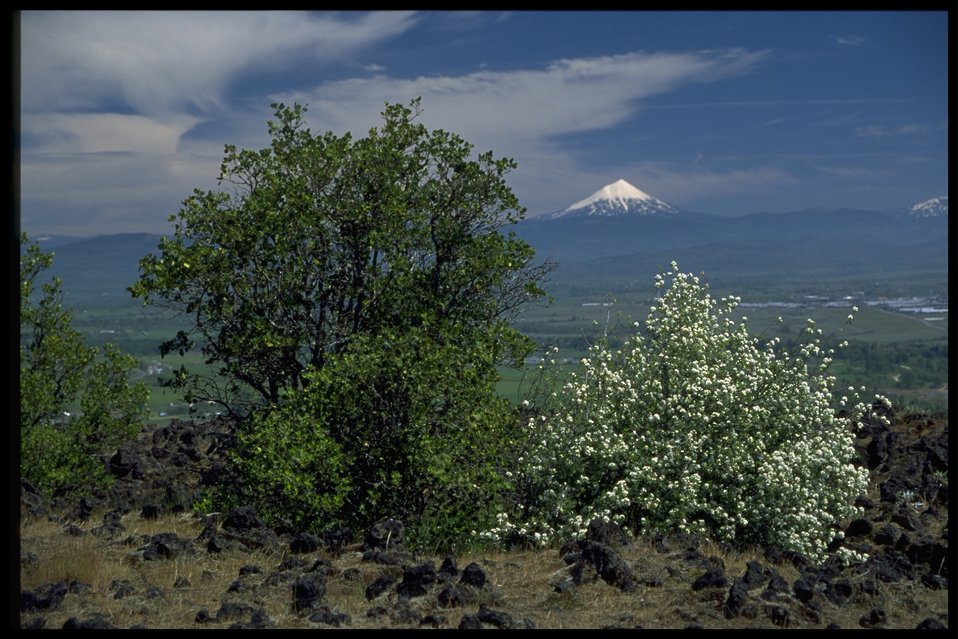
Farshot of service berry, Amelanchier alnifolia.